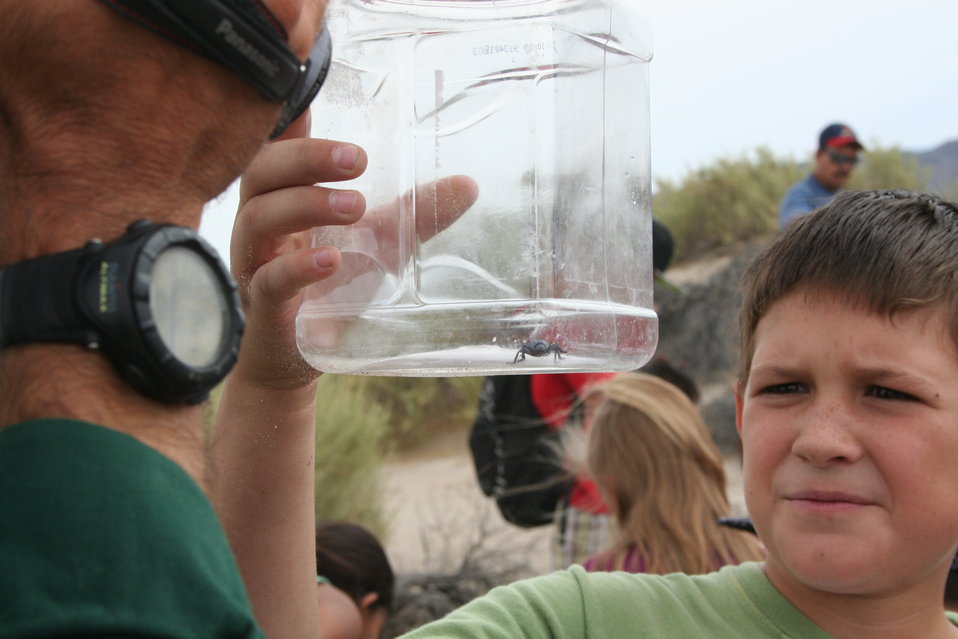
Eleodes beetle

A student from Amargosa Valley elementary school examines an Eleodes beetle that was caught in a pitfall trap. Cyndi Souza/USFWS photo, 9-10-2011.